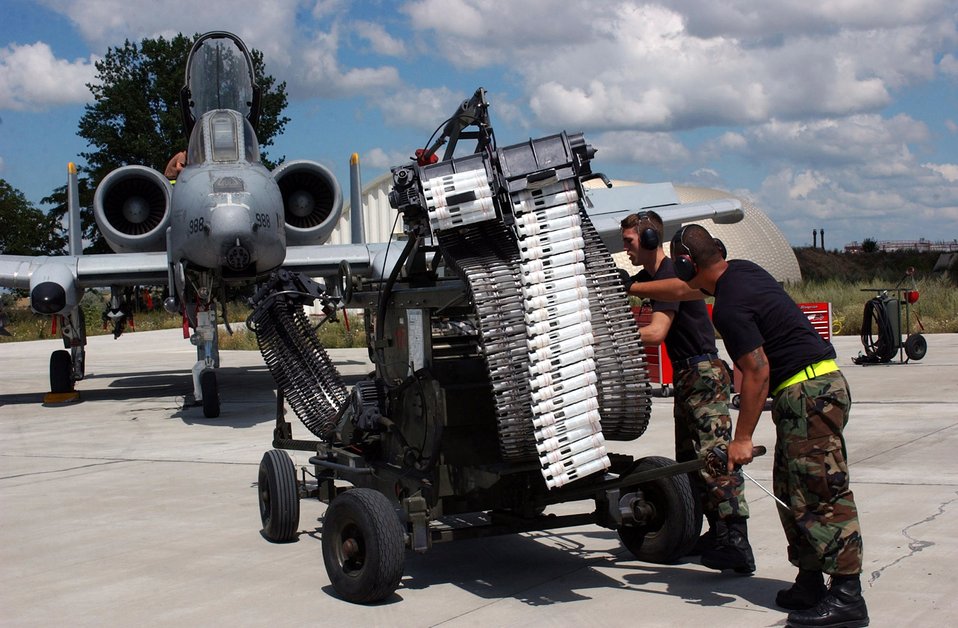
Loading assembly

BABADAG TRAINING AREA, Romania -- Airmen 1st Class Johnny Powell and Kalilimoku Hunt load 30 mm rounds into an A-10 Thunderbolt II during Romanian-American Training Exercise 2005. Both are from the 52nd Aircraft Maintenance Squadron at Spangdahlem Air Base, Germany.